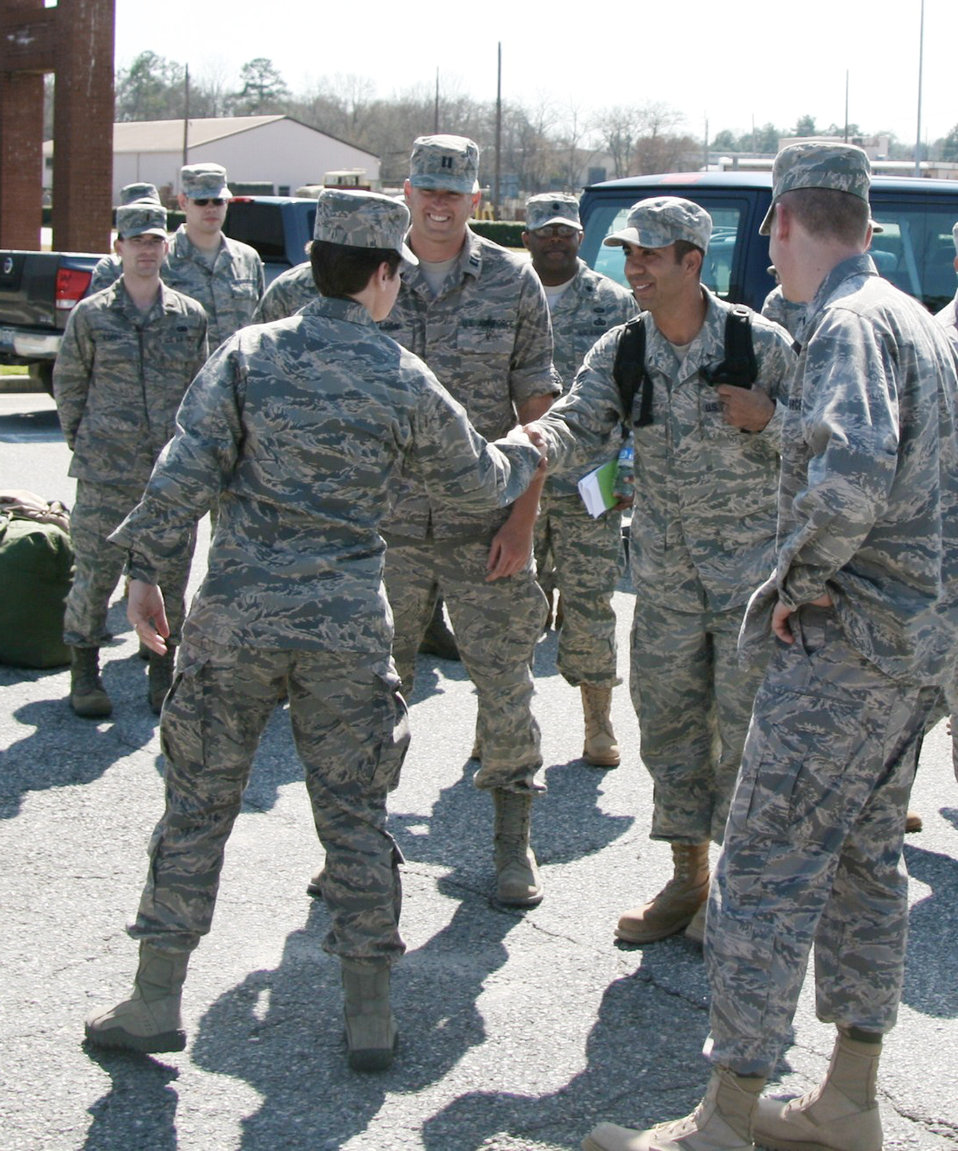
Robins officials welcome returning members from Haiti mission

Col. Theresa Giorlando welcomes home Staff Sgt. Jon Hutchins from his deployment to Haiti March 16, 2010, at Robins Air Force Base, Ga. Sergeant Hutchins was the network specialist on a team that deployed to Haiti for six weeks providing expeditionary communications in support of Operation Unified Response. Colonel Giorlando is from the 689th Combat Communications Wing, and Sergeant Hutchins is assigned to the 53rd Combat Communications Squadron Deployable Initial Communications Element Team.